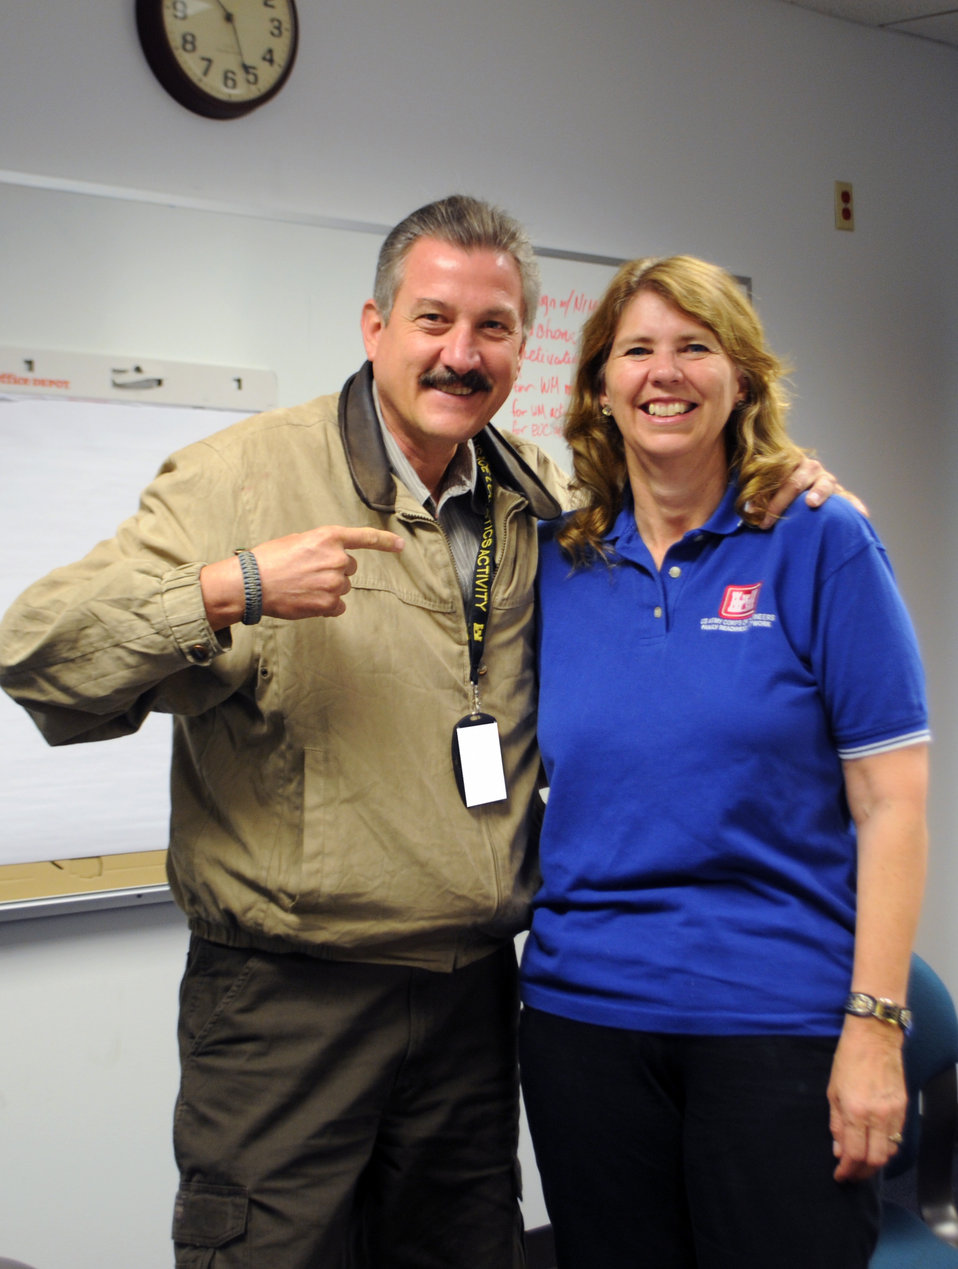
South Pacific Division holds regional Family Readiness Network Workshop

U.S. Army Corps of Engineers Logistics Activity employee in San Francisco, John Kulick (left), met with the Corps’ South Pacific Division (SPD) Regional Family Readiness Network (FRN) in Sacramento, Calif., Jul. 14, 2011, to express his gratitude for the support he received during his year-long deployment to Afghanistan. SPD Family Support Coordinator, DeAnn Isenberg (right), served as his sponsor during his deployment and was praised by Kulick for sending him care packages with items that reminded him of home. “It was those things that mattered most,” says Kulick.